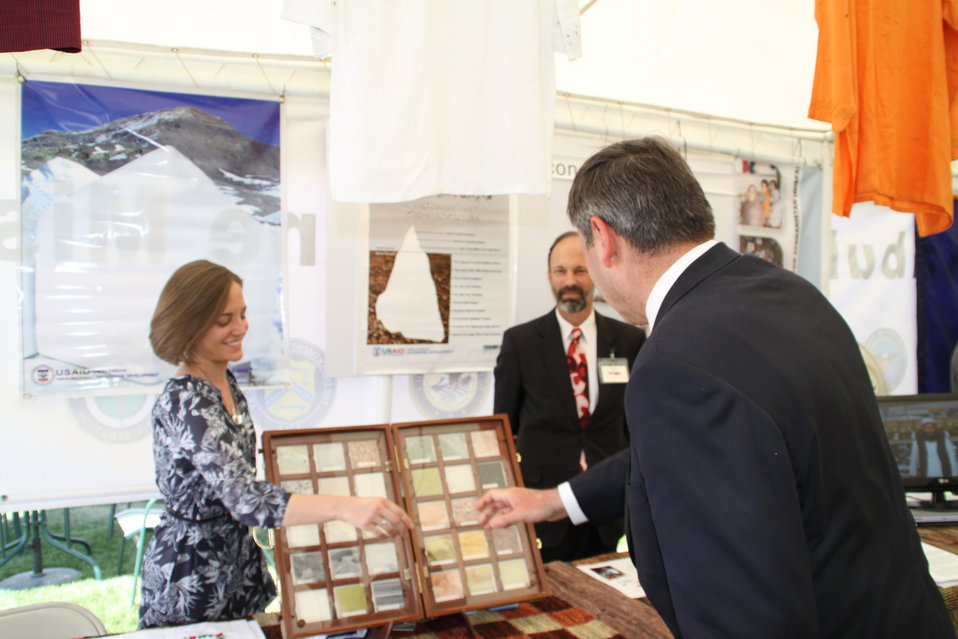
Kabul Official July 4th Celebration